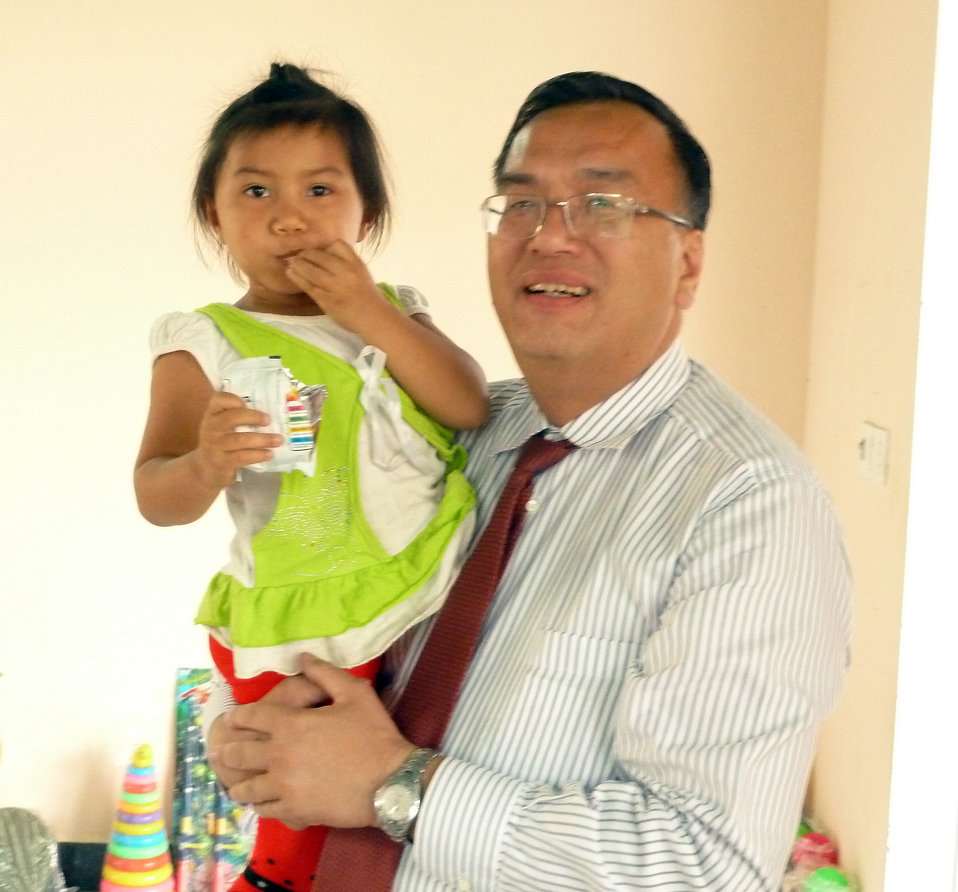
U.S. Consul General Le Thanh An